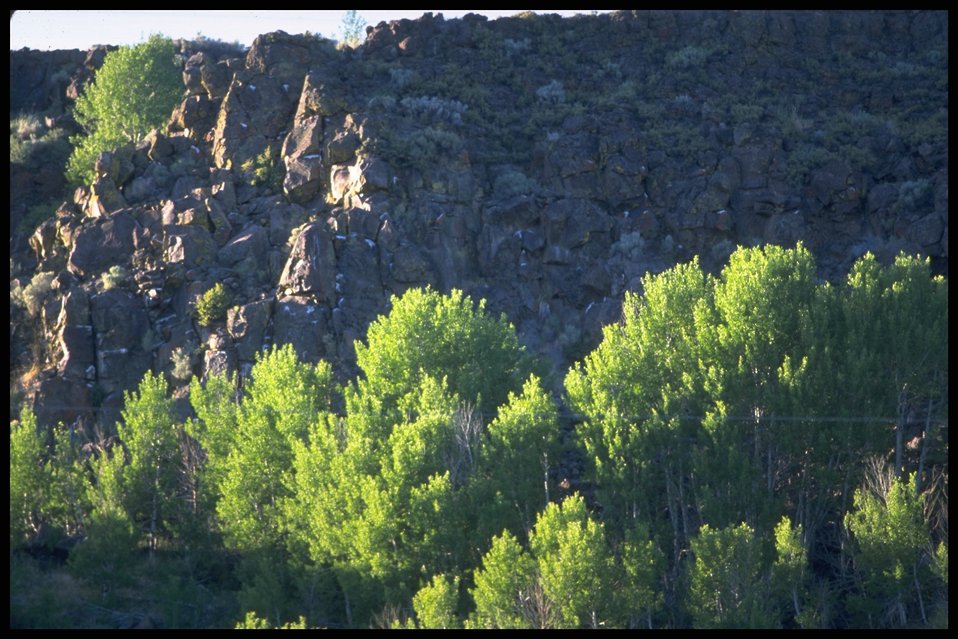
Scenic view of trees and rock formation, Lakeview District.